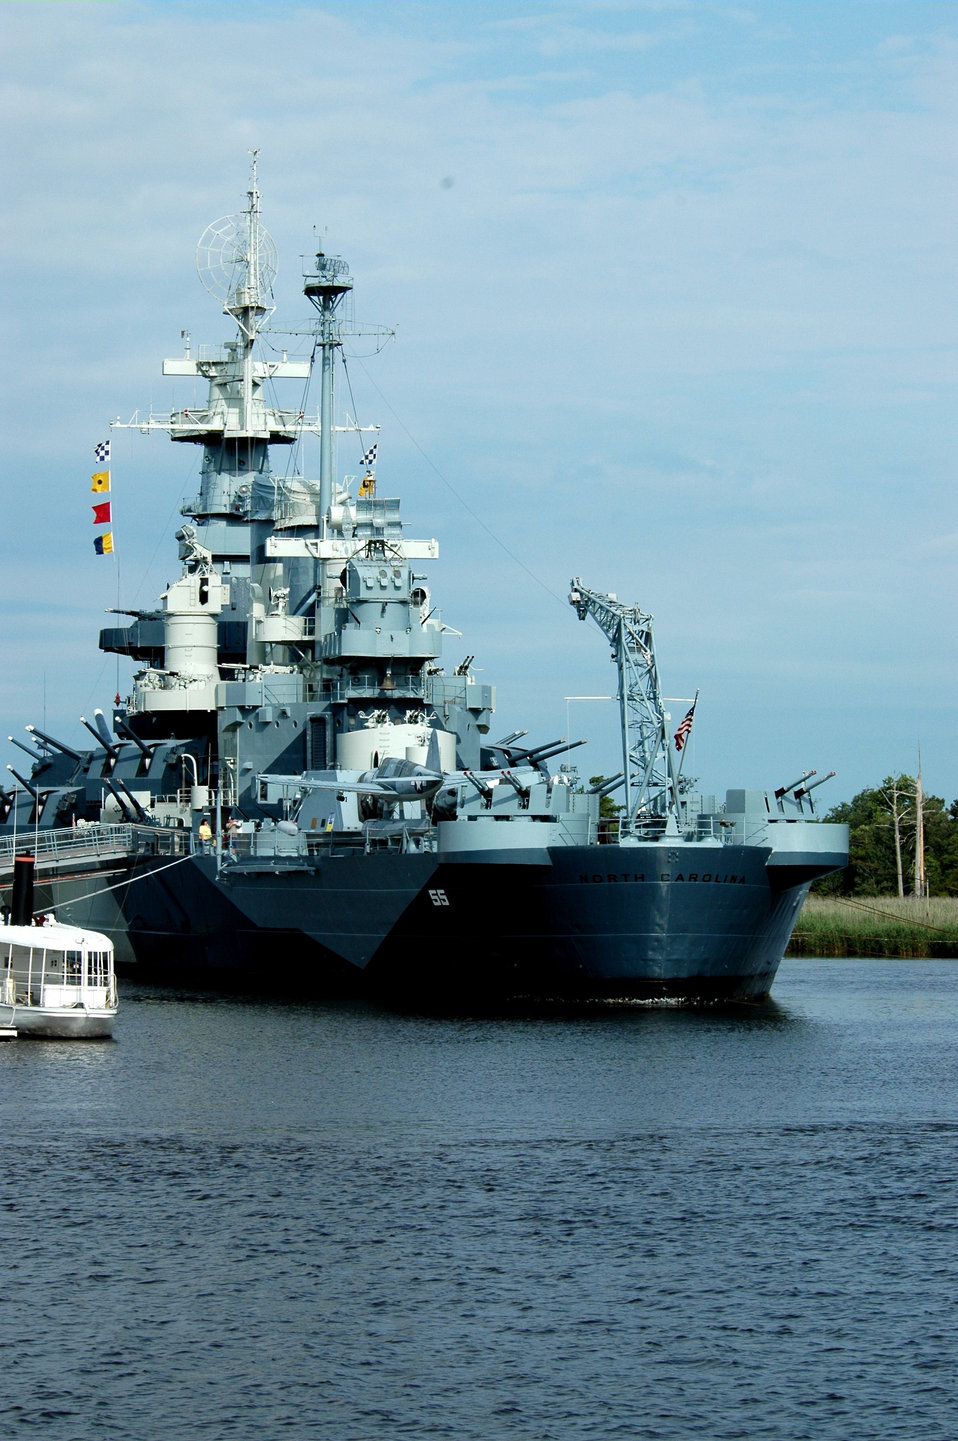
Battleship NORTH CAROLINA (BB55), a World War II era battleship that saw many heroic actions. The ship was decommissioned in 1947 and brought to Wilmington in 1961.